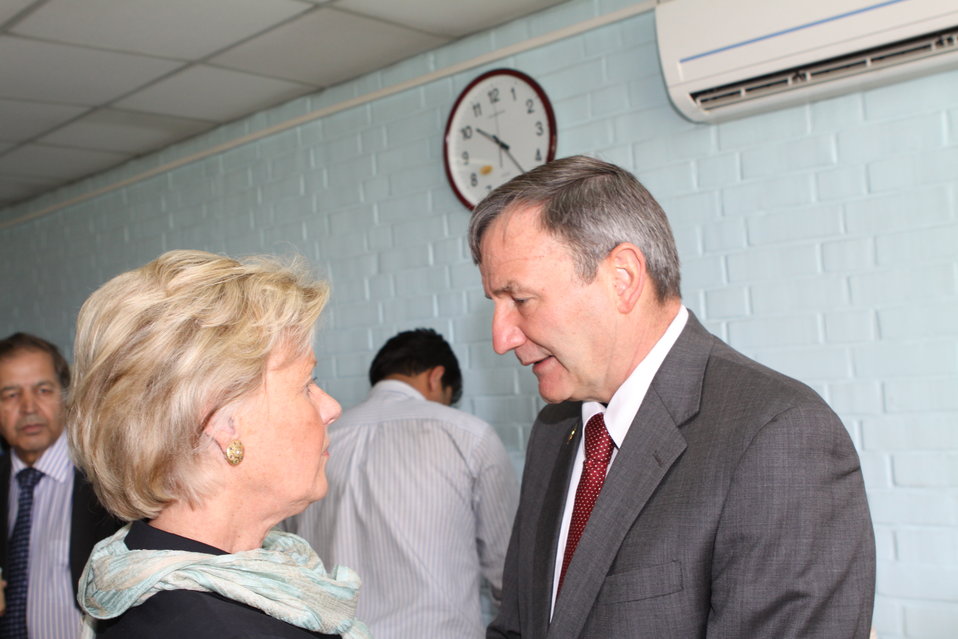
100526 AUAF Graduation 034